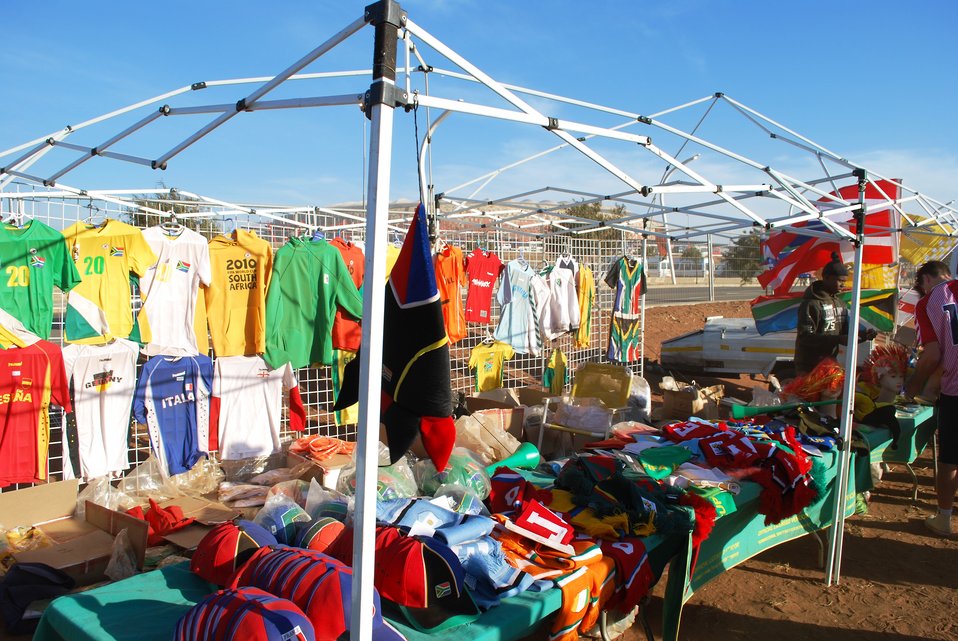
Vendors dot the landscape leading to the Royal Bafokeng Stadium in Rustenburg, South Africa, before the U.S. vs. England World Cup soccer match on June 12, 2010.